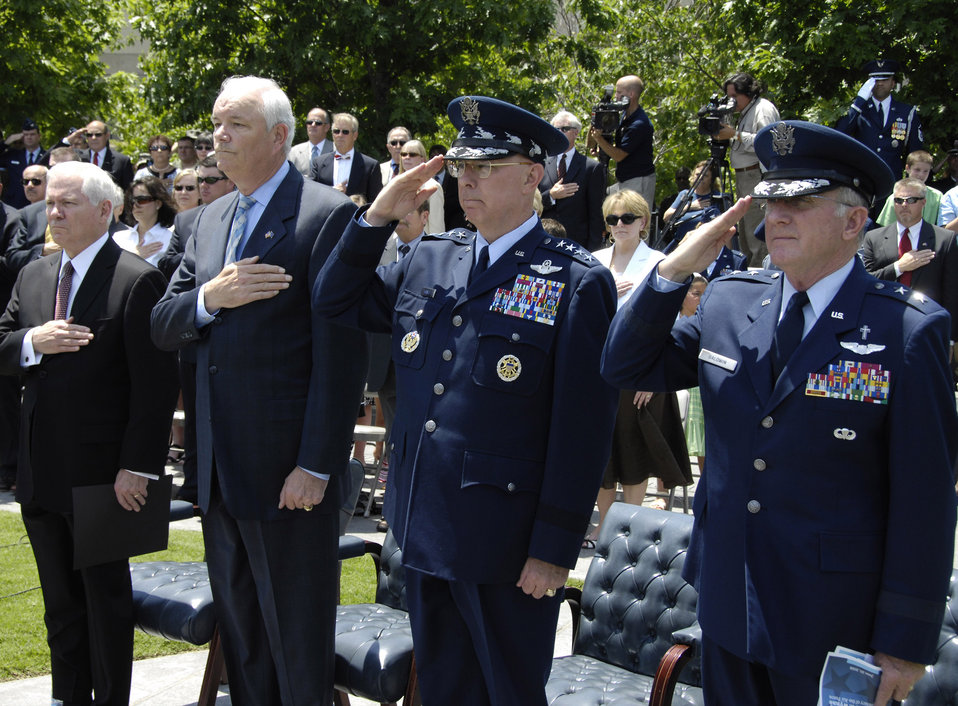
SECAF salutes Airmen during ceremony

The official party pays honors during the National Anthem during a farewell ceremony in honor of Michael W. Wynne, Secretary of the Air Force at the U.S. Air Force Memorial, Arlington, Va., June 20. From left to right are Defense Secretary Robert M. Gates, Air Force Secretary Wynne, Air Force Chief of Staff T. Michael Moseley and recently retired Air Force Chief of Chaplains Maj. Gen. Charles Baldwin. Secretary Wynne is the Air Force's 21st secretary.